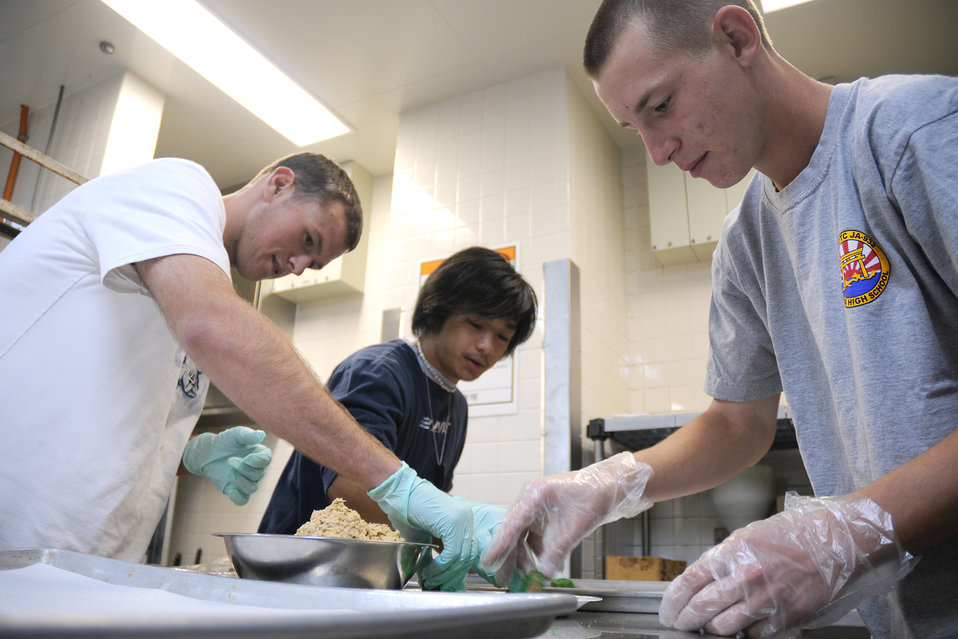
Kadena Ccookie Drop

Members of the National Honor Society from Kadena High School prepare cookies Nov. 19 at the 18th Force Support Squadron's central kitchen on Kadena Air Base, Japan. Volunteers prepared more than 24,000 cookies that will be delivered to servicemembers living in the dorms here at Kadena.